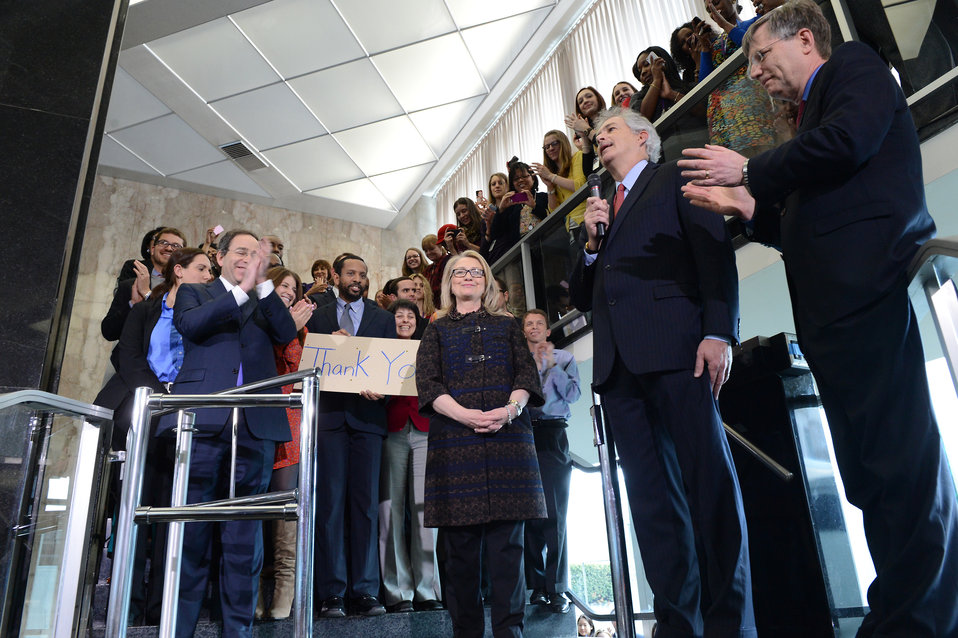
Secretary Clinton Says Farewell

U.S. Secretary of State Hillary Rodham Clinton says farewell to State Department employees at the U.S. Department of State in Washington, D.C., on February 1, 2013.